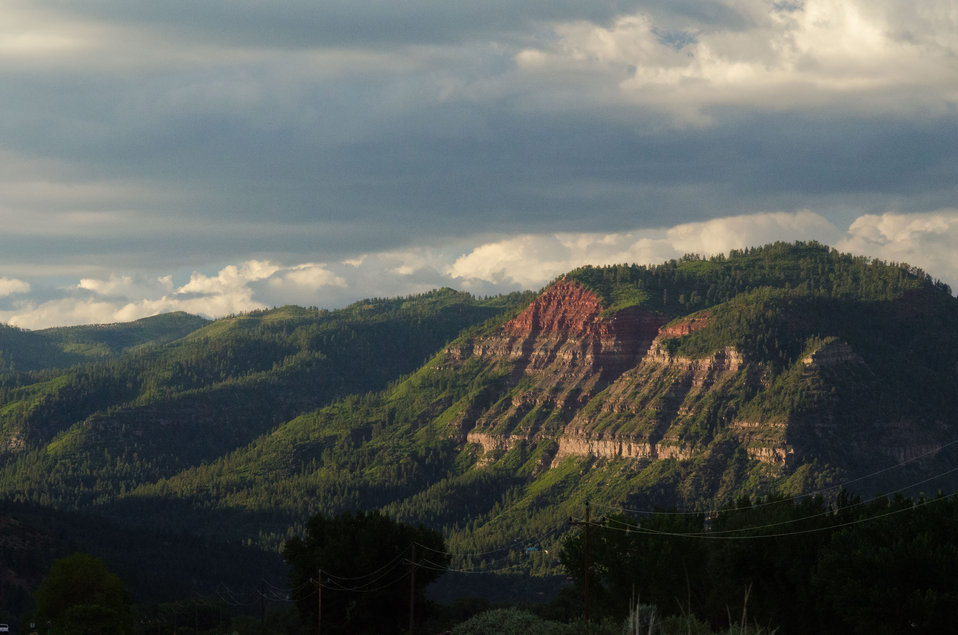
The Southwestern region of Colorado is known for historic cities, natural resources, vacation destinations, government organizations, educational institutions and more on July 17, 2012.